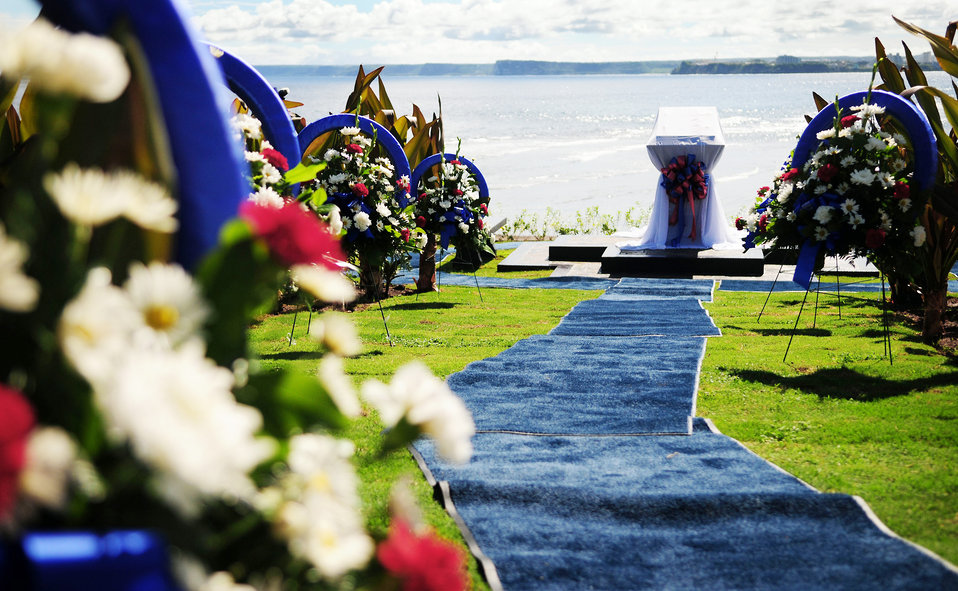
RAIDR 21 memorial

These wreaths represent each of the six Airmen who were flying the B-52 Stratofortress -- call sign RAIDR 21 -- that crashed off the coast of Guam July 21, 2008. The wreaths were laid in front of the memorial July 20 during an unveiling ceremony at the Governor's Complex at Adelup Point in Hagatna, Guam. Family, friends and co-workers of RAIDR 21 along with members of the local Guam community honored the memory of the Airmen with the ceremony and the unveiling of the monument.